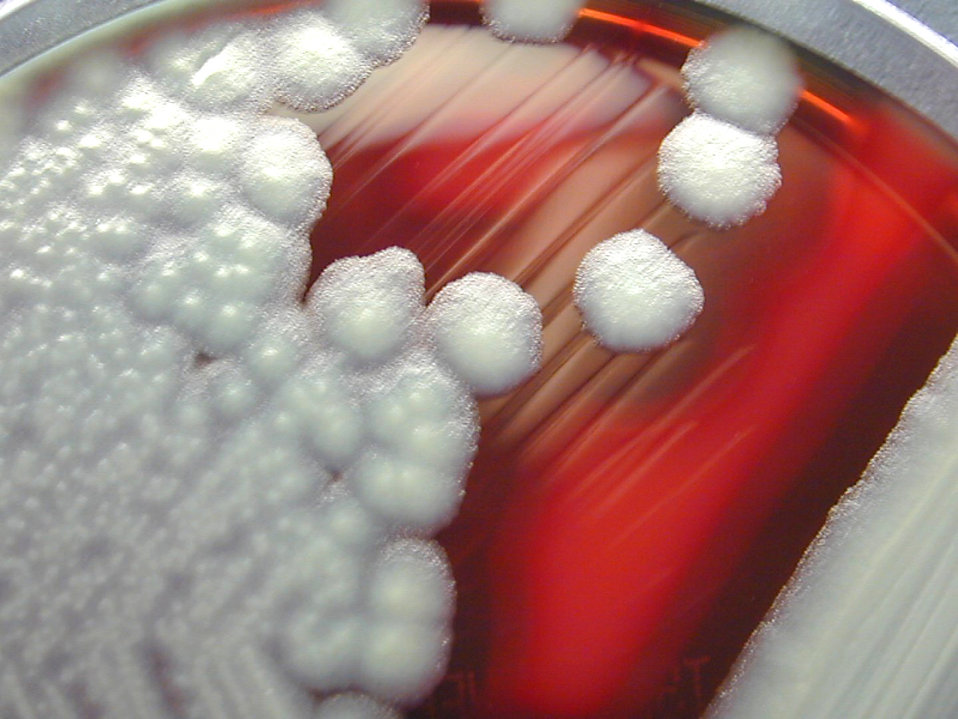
Bacillus cereus showing hemolysis on sheep blood agar.